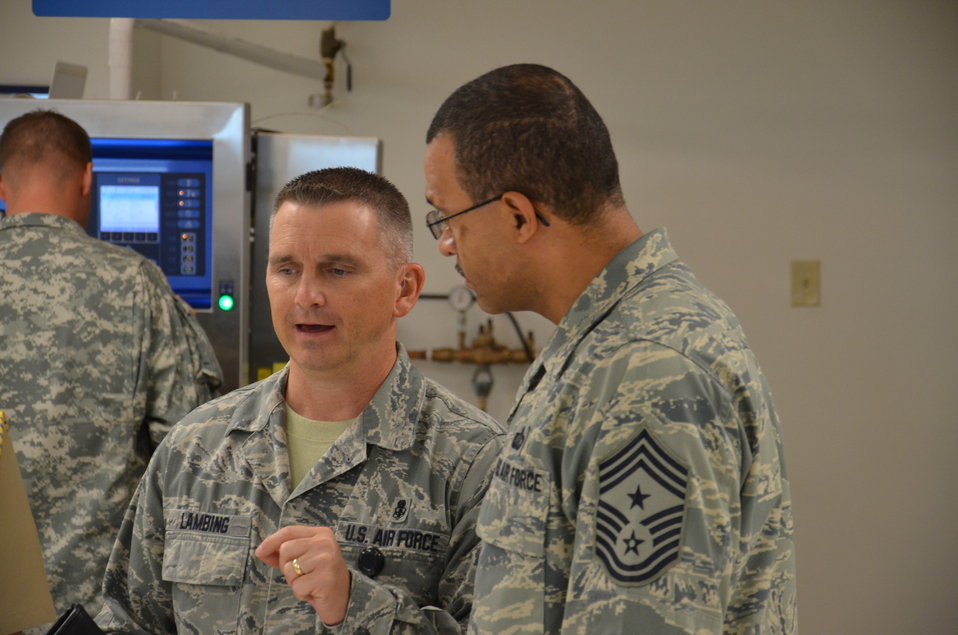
AF chief honored with Army’s prestigious medical Order

Chief Master Sgt. Kevin Lambing (left) discusses the operations of the Medical Education and Training Campus with another command chief at Fort Sam Houston, Texas, recently. Lambing was inducted into the Army's Order of the Military Medical Merit April 20. He was the command chief of the METC and is slated become the chief of the Air Force Medical Enlisted Force in the Office of the Surgeon General.